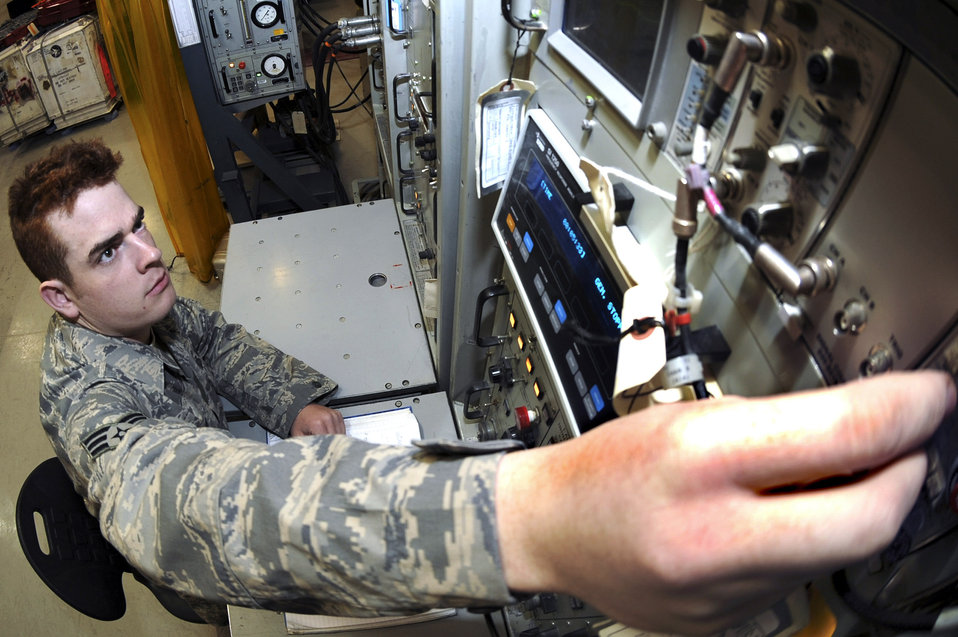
Keeping the Fighters Fighting.

Senior Airman Josh Simmons adjusts the image on an oscilloscope at a radar test station Feb. 19 in an undisclosed location in Southwest Asia. The test station ensures the F-15E Strike Eagle radars are working properly and are mission ready. Airman Simmons is an avionics intermediate section radar team leader for the 379th Expeditionary Maintenance Squadron.